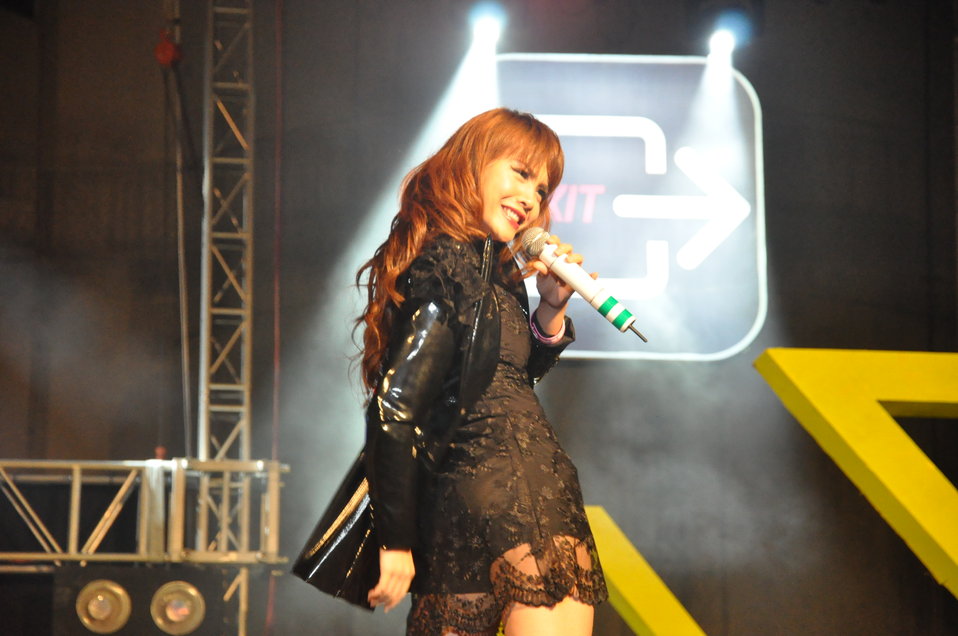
USAID and MTVEXIT concert in Can Tho

Concert in Can Tho against human trafficking, April 10, 2010